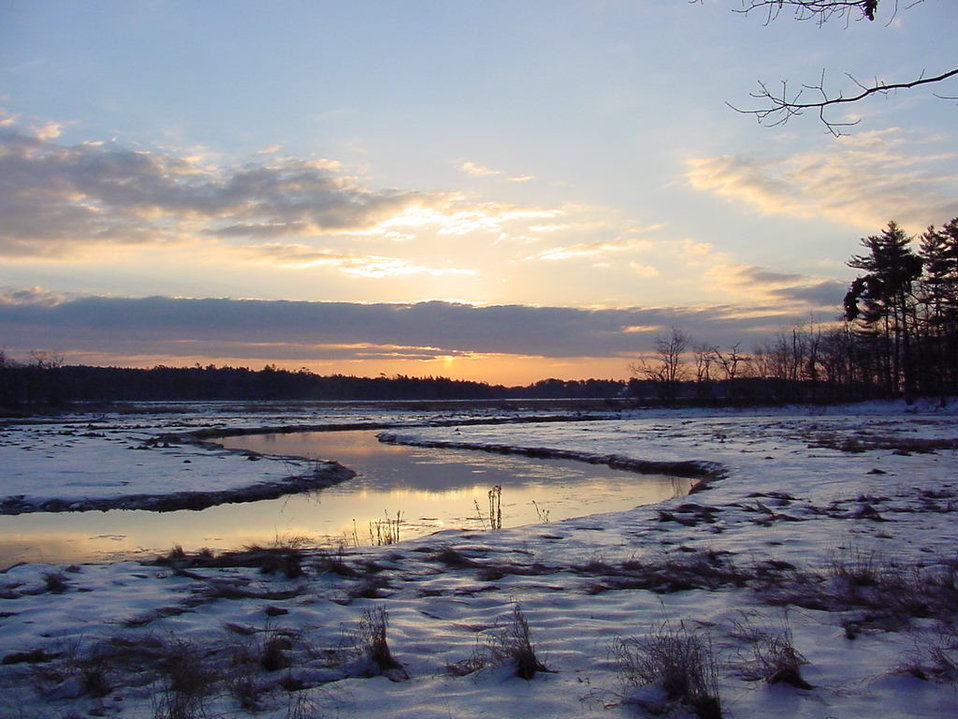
Photo of the Week - Sunrise (ME)

Photo of the Week- 3/11/13

Sunrise at Rachel Carson National Wildlife Refuge in Wells, Maine.